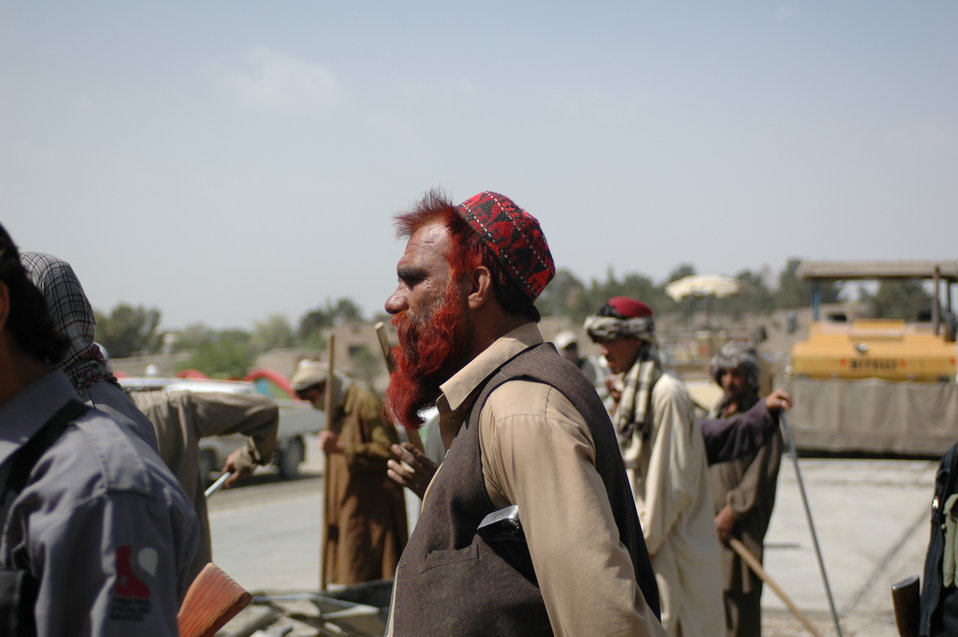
April 29, 2010 Henna for Khost Man

Some people in Afghanistan have a custom of putting henna in their hair, in their beards, on their finger nails, or on the palms of their hands, all in the name of beauty.

It gives the hair, fingernails, and skin a reddish tint, depending on how much you use.

One story goes that years ago, older fighters along the Pakastan border used henna to cover up the gray hair to appear younger.